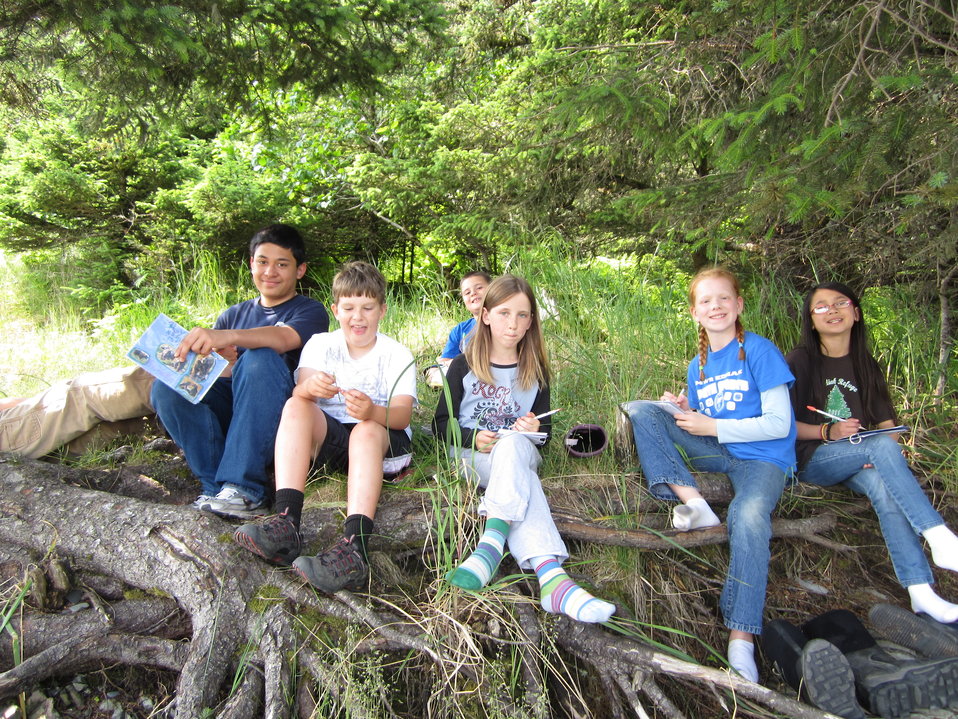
Volunteer Dyllon with Salmon Camp

Photo Credit: USFWS
Source: Kodiak NWR
Kodiak Refuge hosts a youth leadership program for volunteers 7th-12th grade to assist our staff as instructor aides for our annual science camp.